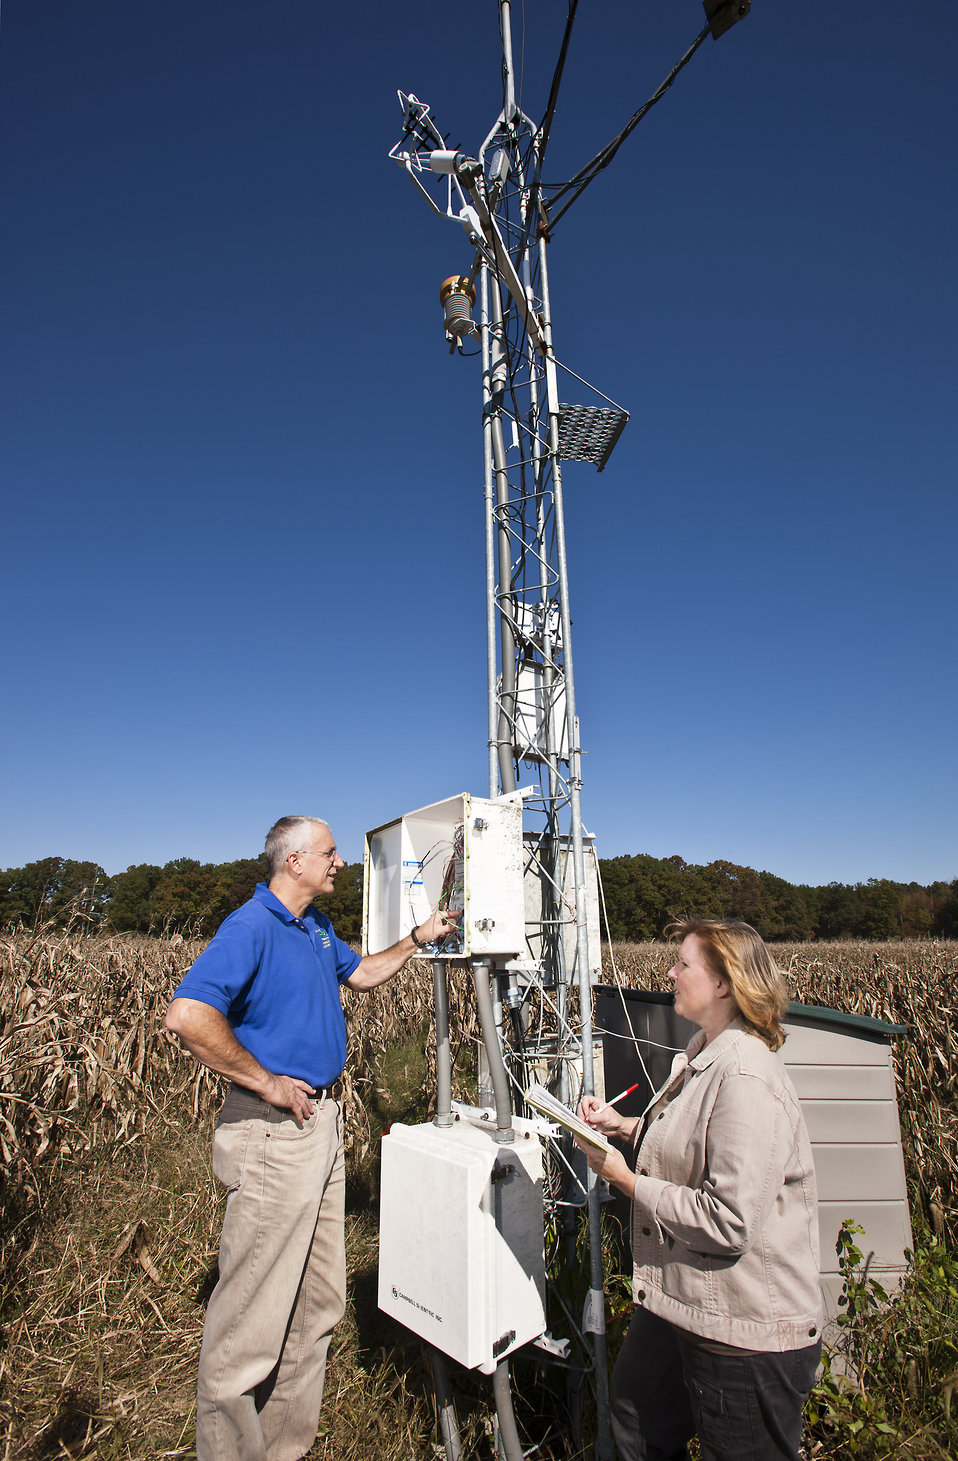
U.S. Department of Agriculture (USDA) Agriculture Research Service (ARS) research leader hydrologist Bill Kustas and physical scientist Martha Anderson check measurements from a micrometeorological station located at the OPE3 field research site in Beltsville, MD on Mar. 7, 2003.